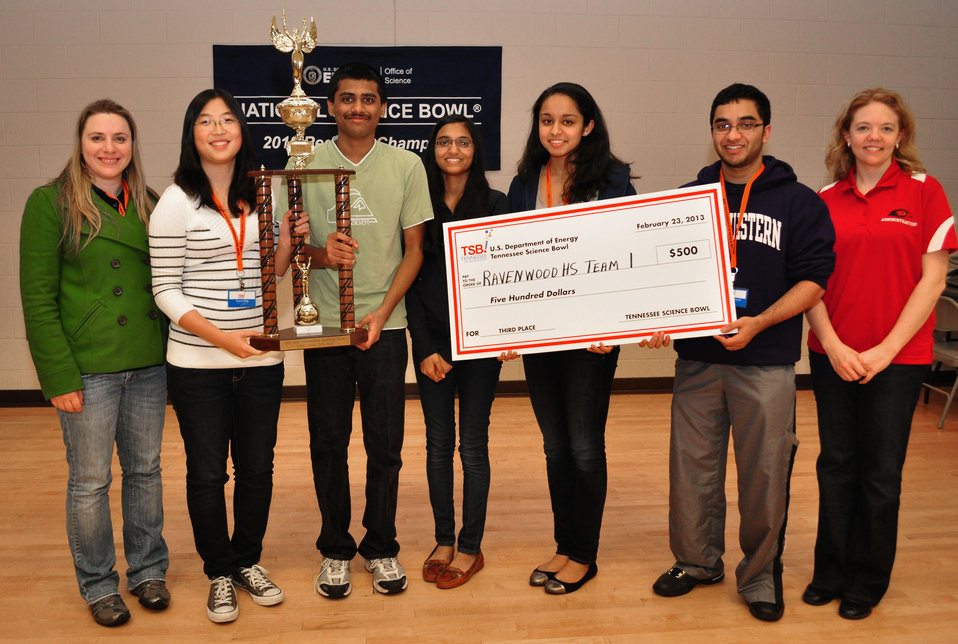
Ravenwood 1 High 3th Place Tennessee Science Bowl 2013

13-010 DOE photo Lynn Freeny 2-23-2013 Left to right Coach Avrill Buerstetta, Frances Ding, Venkata Amarthaluru, Kavga Sundaram, Niman Mann, Ashwin Sundaram, Amy Maffei Maryville Tennessee